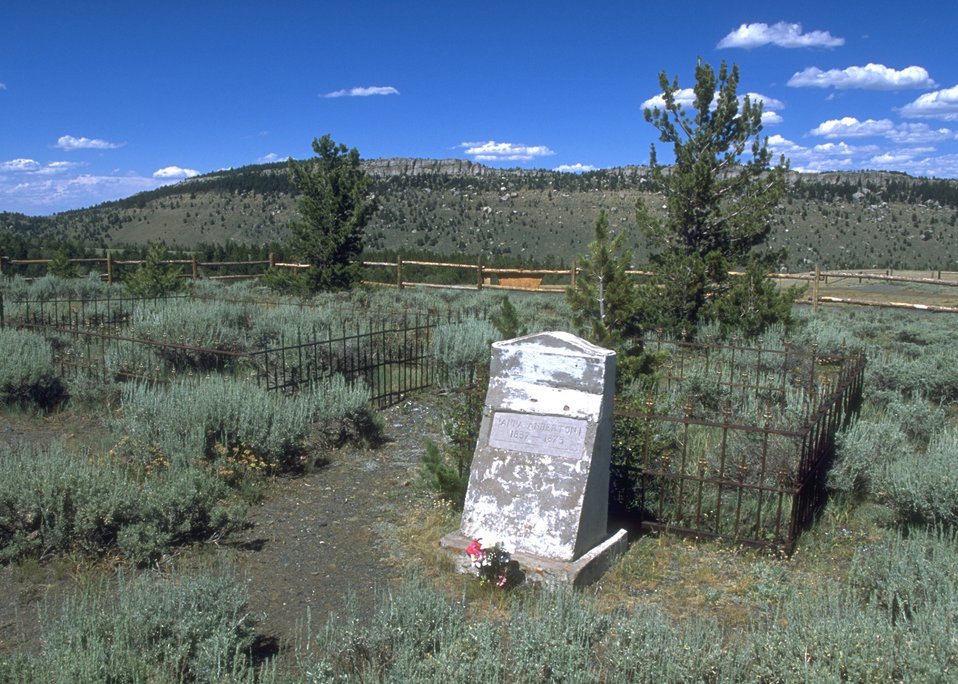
Grave yard near Miners Delight, Lander Field Office.